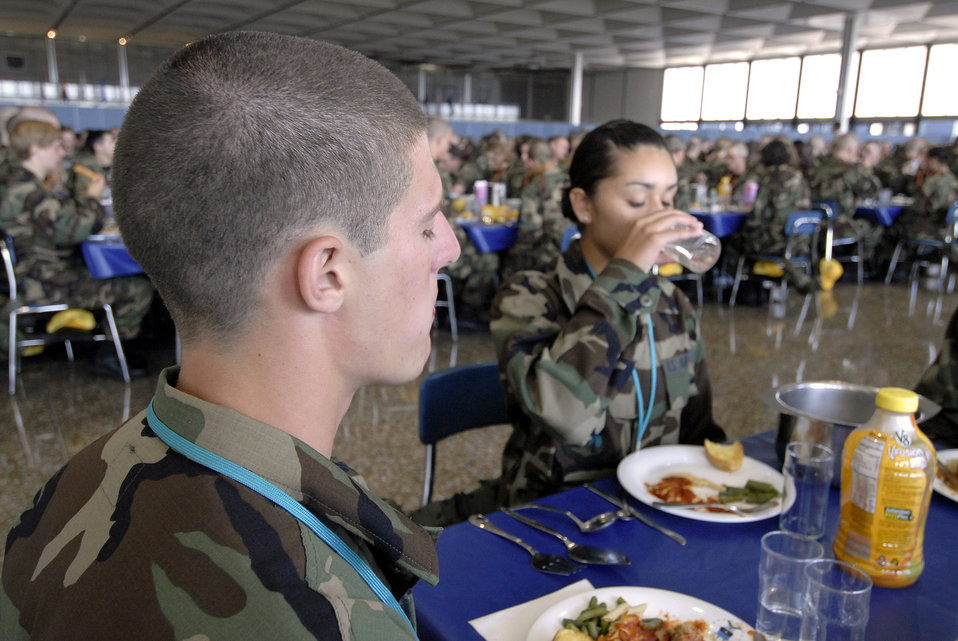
Eyes on the eagle

Basic cadet trainees must follow strict rules as they eat their first lunch since arriving as the Class of 2011 June 29 at the U.S. Air Force Academy in Colorado. The cadets are in their first week of training and must not take their eyes off the eagle on their plate as they eat. They are in the first half of basic cadet training, commonly known as